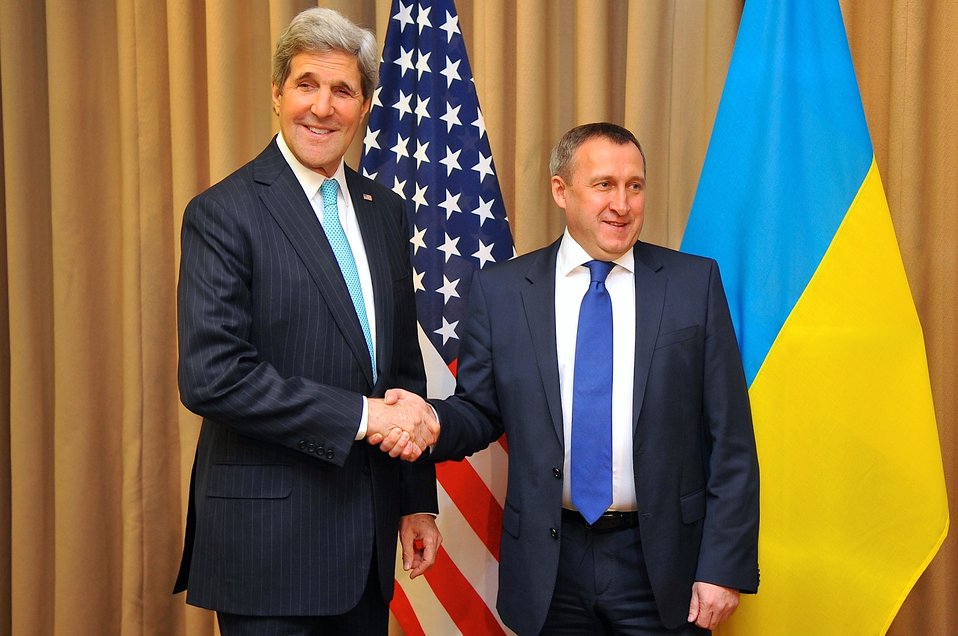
Secretary Kerry Chats With Ukrainian Foreign Minister Deshchytsia Before Meeting With Russians

U.S. Secretary of State John Kerry chats with Ukrainian Foreign Minister Andrii Deshchytsia before the two joined with Russian and European Union officials for four-way talks about Ukraine in Geneva, Switzerland, on April 17, 2014.